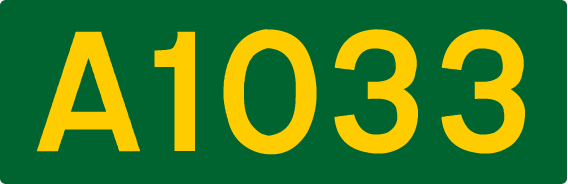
no original description